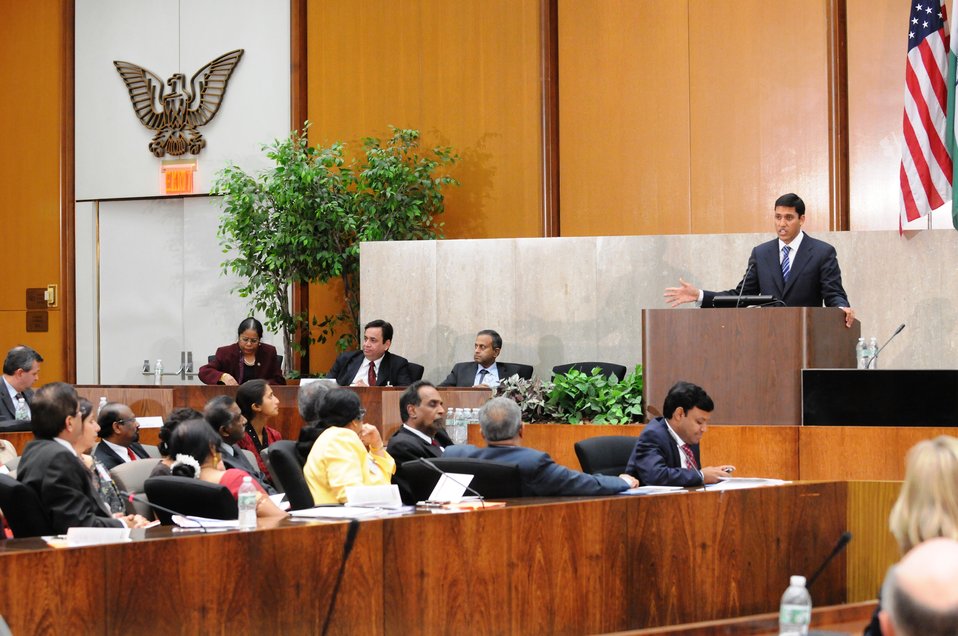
USAID Administrator Shah Delivers the Keynote Address

USAID Administrator Dr. Rajiv Shah delivers keynote address at the U.S.-India People to People Conference held at the U.S. Department of State in Washington, D.C., on October 28, 2010. Partner organization representatives from the Indian American Leadership Council (IALC) and America India Foundation (AIF) sit to his right.